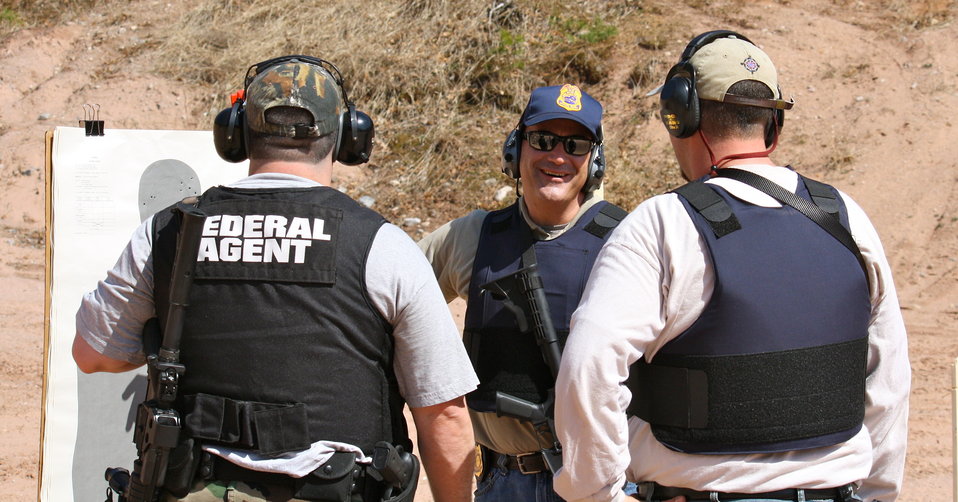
Special Agent in Charge with Agents

Law Enforcement target practice at outdoor shooting range in Glastonbury, CT.